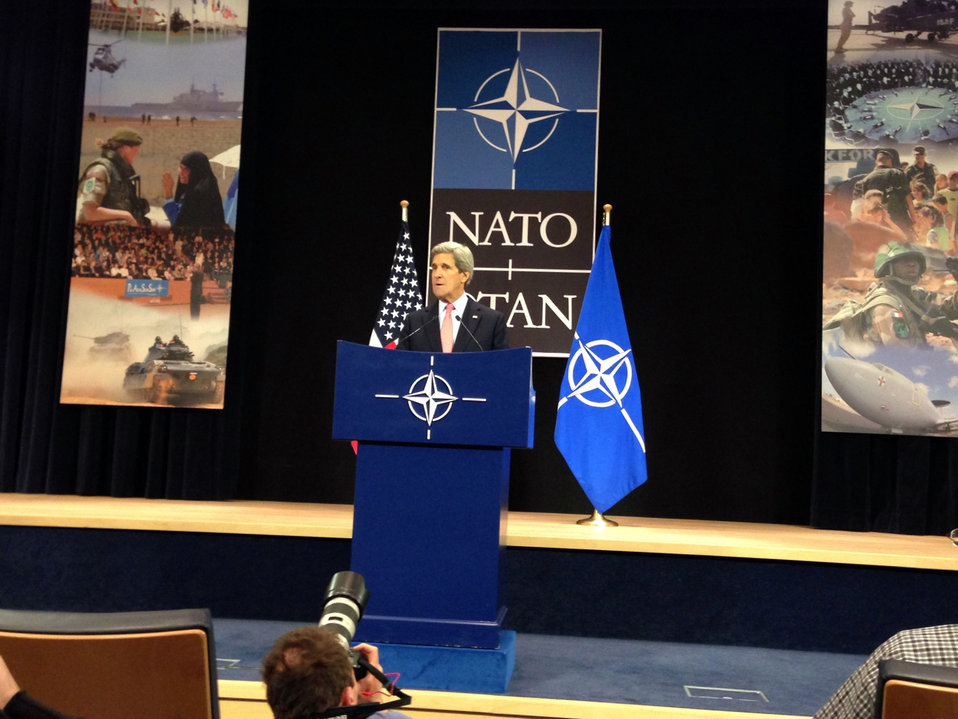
Secretary Kerry Addresses Reporters at NATO Foreign Ministerial

U.S. Secretary of State John Kerry addresses reporters amid a day of meetings with his foreign ministerial counterparts at NATO headquarters in Brussels, Belgium, on April 23, 2013.